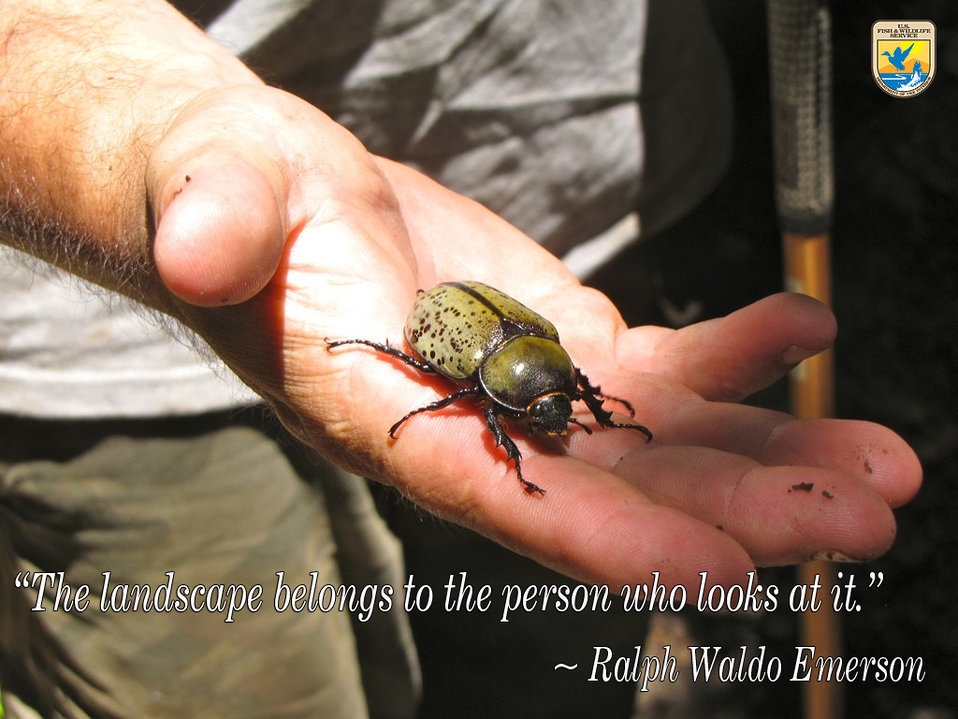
Get Inspired!

Download, share and enjoy!